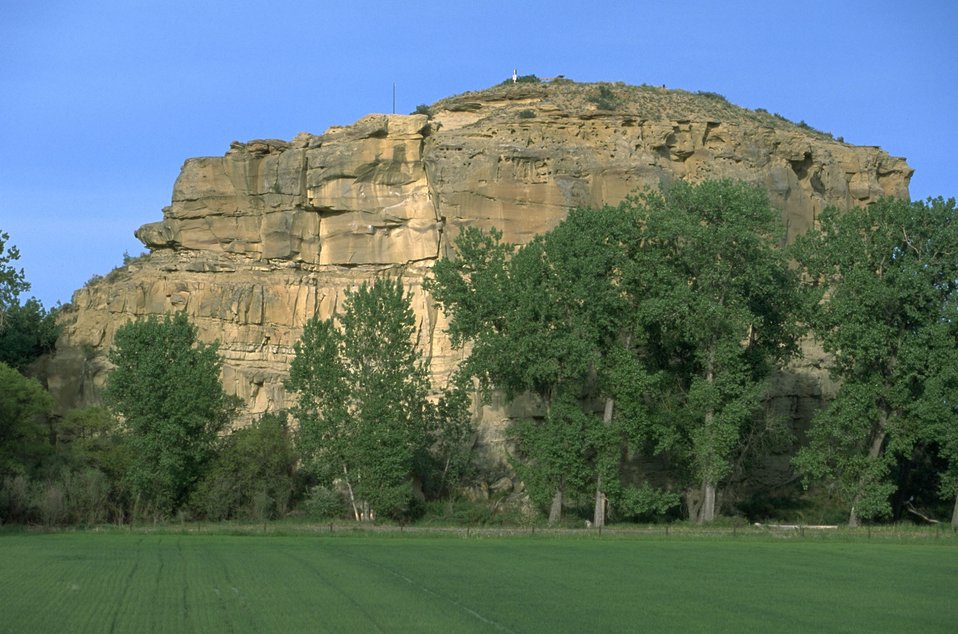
Pompeys Pillar National Monument viewed from the west